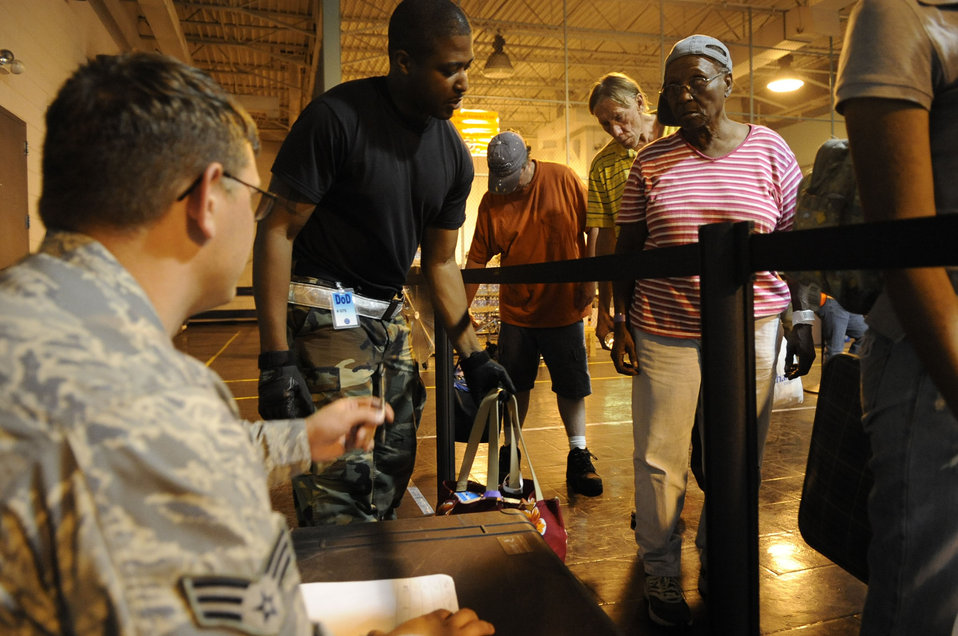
Airmen there as hurricane evacuation begins

Senior Airman Robert Haog (left) and Staff Sgt. Adam White weigh luggage as evacuees leaving before Hurricane Gustav hits the Gulf Coast prepare to depart the Louis Armstrong International Airport in New Orleans Aug. 30. They will be boarding flights officials with the Federal Emergency Management Agency and Department of Defense have chartered to transport citizens who otherwise could not leave on their own to destinations safely outside the hurricane's path. Airman Haog and Sergeant White are from the 615th Contingency Response Wing at Travis Air Force Base, Calif.